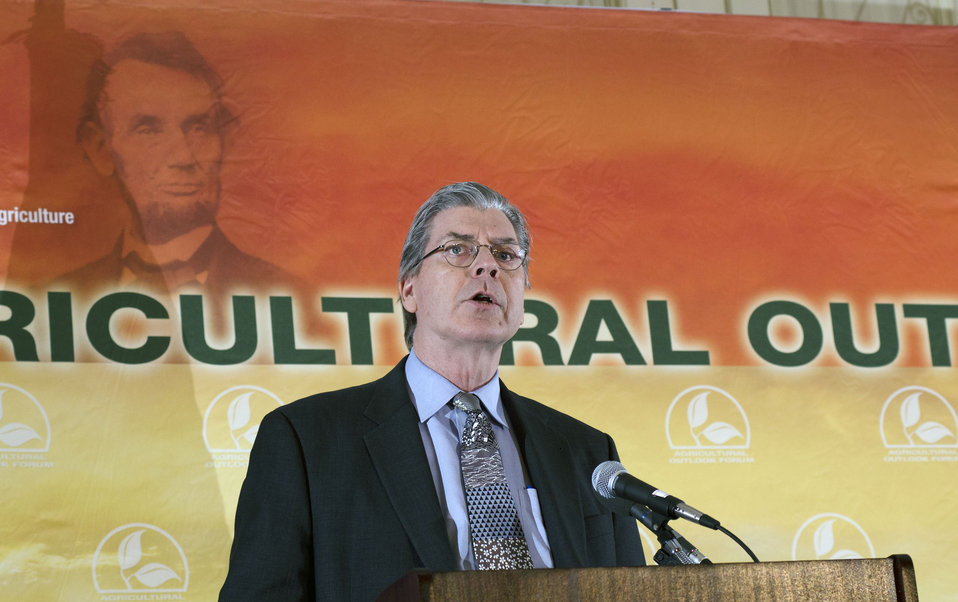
Agriculture Chief Economist Joseph Glauber presents remarks on the 2013 Agricultural Economic and Foreign Trade Outlook at the Opening session of the 2013 Agriculture Outlook Forum, in Crystal City, VA, on Thursday, February 21, 2013.